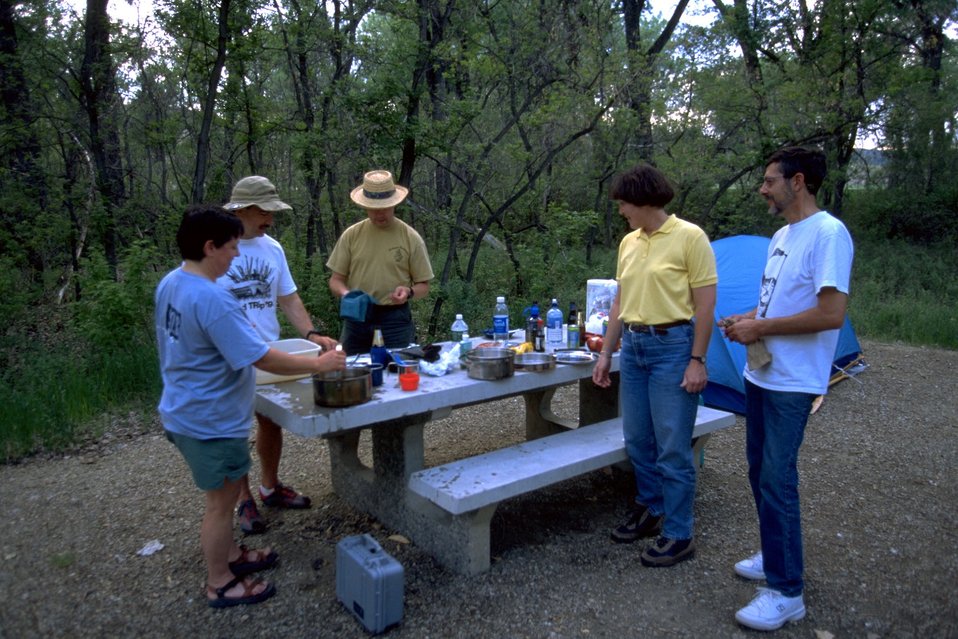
Visitors at a picnic table at Kipp Recreation Site